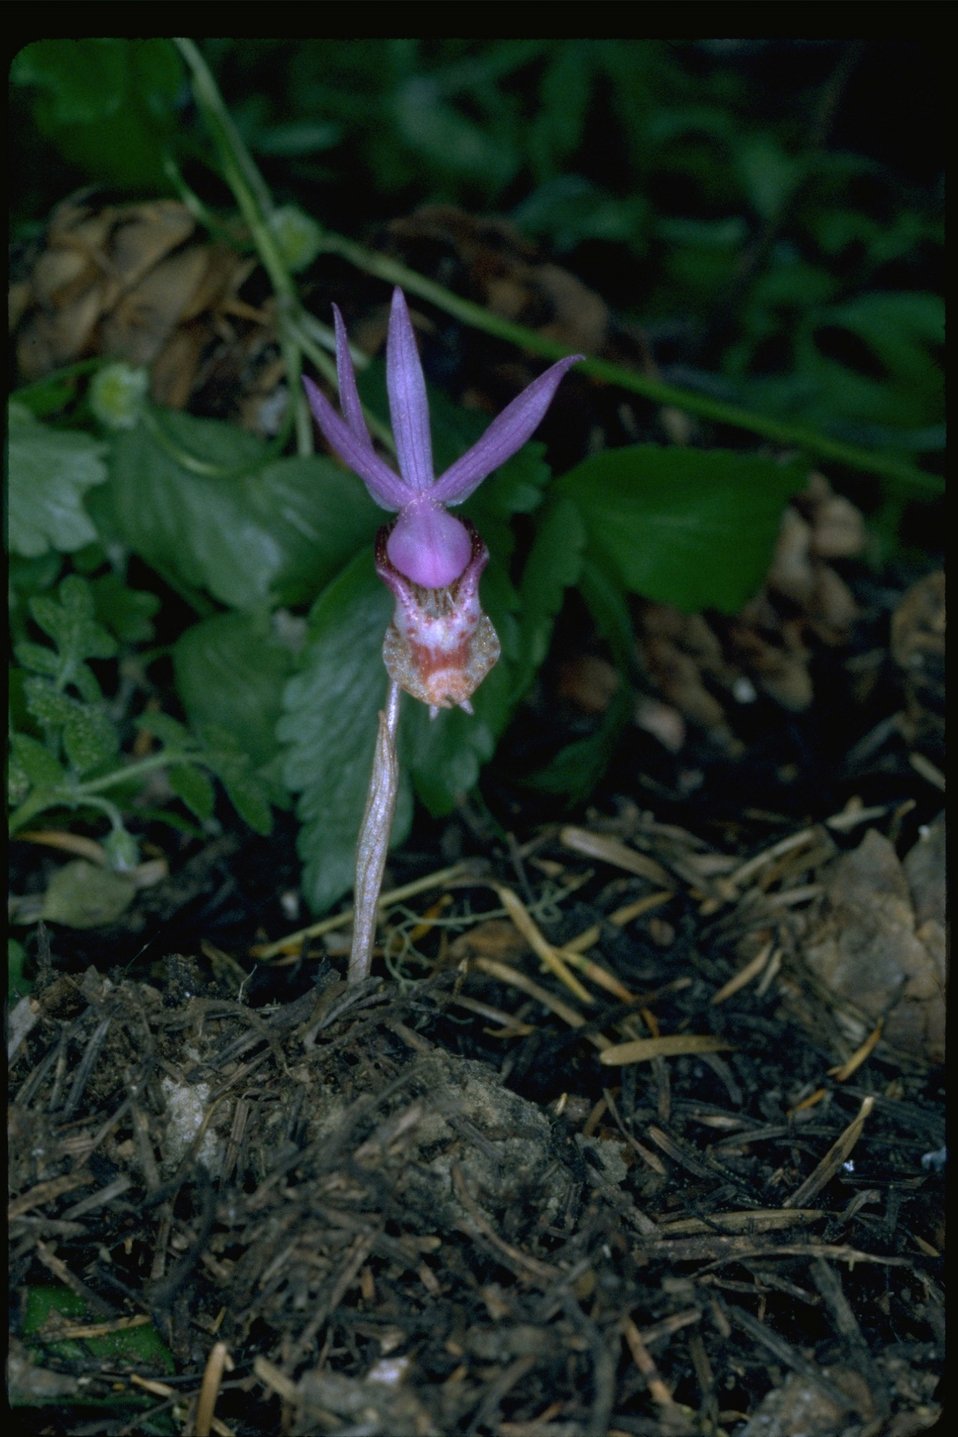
Medium shot of Lady Slipper.